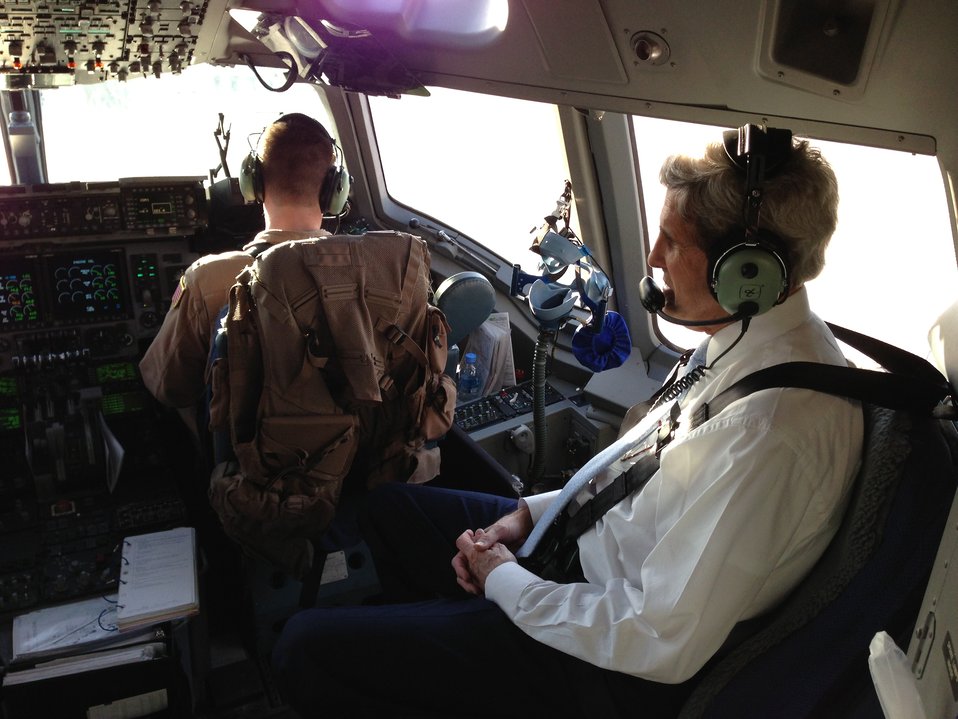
Secretary Kerry Departs Baghdad

U.S. Secretary of State John Kerry settles into the cockpit of the U.S. military transport aircraft that departs Baghdad, Iraq on March 24, 2013.